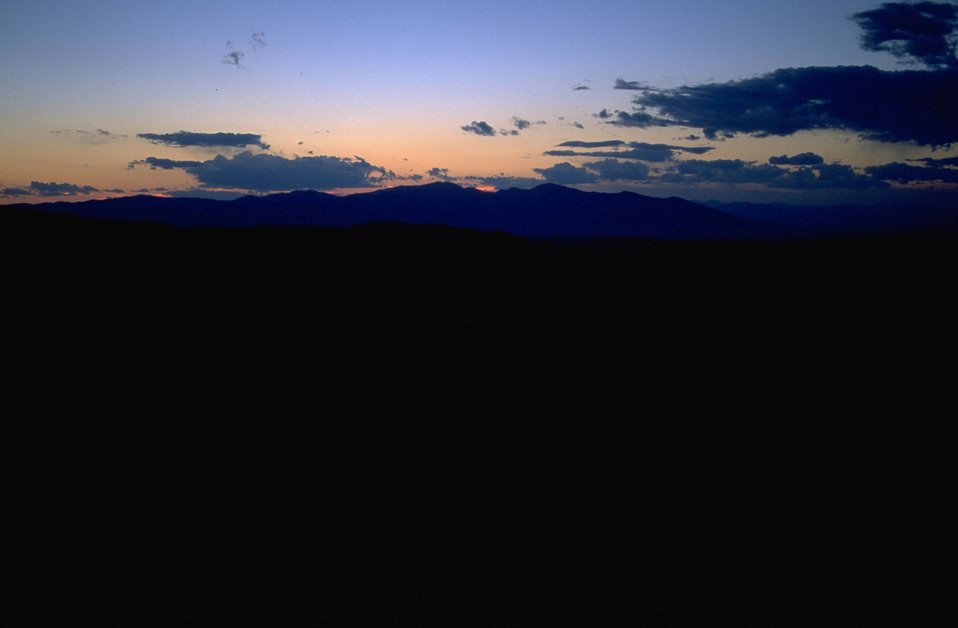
Sun disappearing in an evening sky